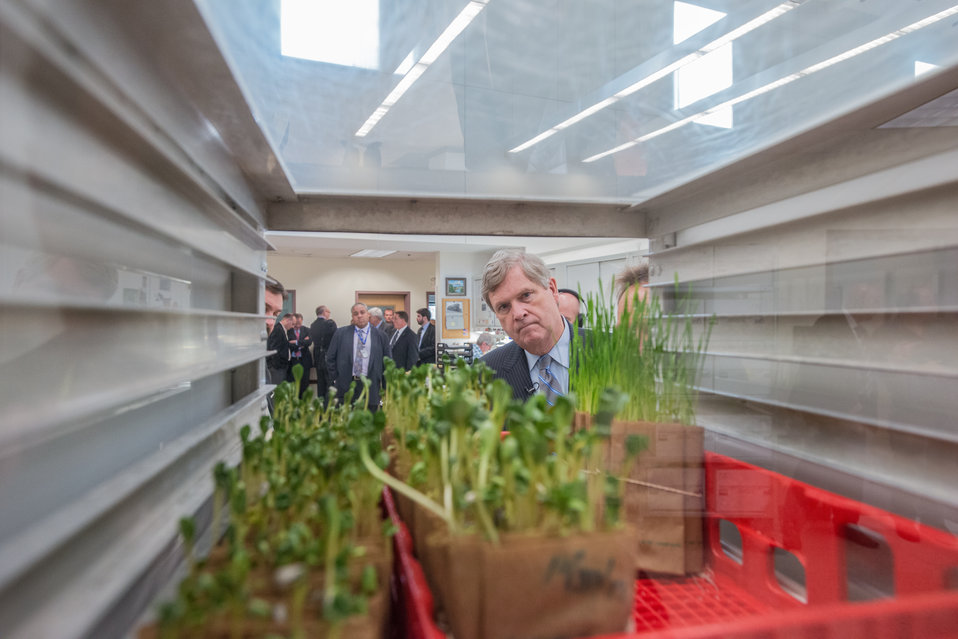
U.S. Department of Agriculture (USDA) Secretary Tom Vilsack, looks at seeds that have been germinated in moist paper towels while he listens to Agriculture Research Service (ARS), National Center for Genetic Resources Preservation (NCGRP), Research Leader Geneticist Dr. David Dierig, talks about the seed quality evaluations being done in the NCGRP Plant and Animal Genetic Resources Preservation Research Unit germination bay, in Ft. Collins, CO, on Wednesday, Nov. 6, 2013.